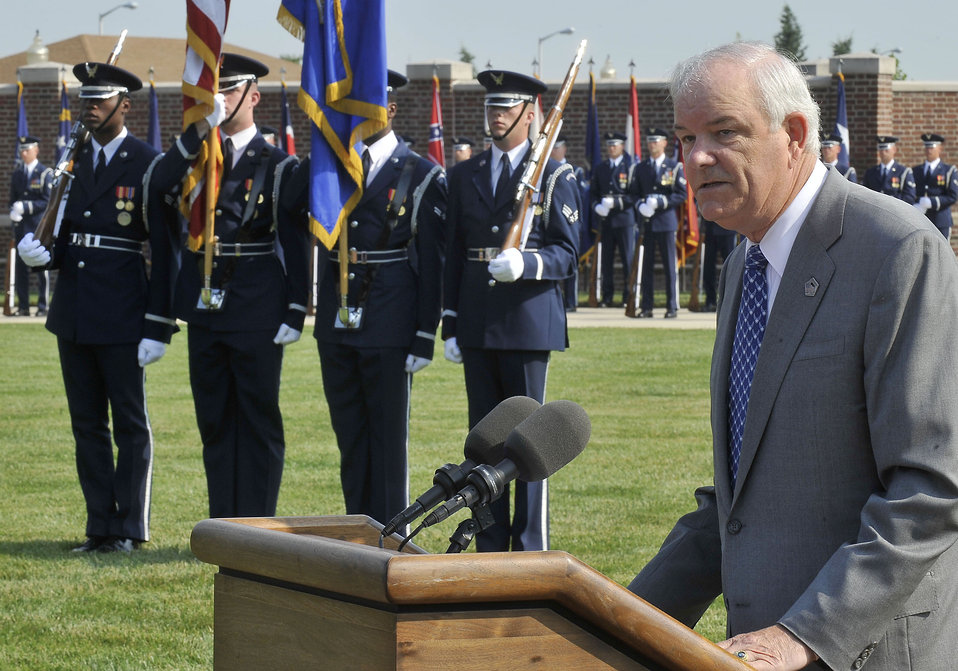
CSAF Retirement Ceremony

Michael Wynne, the former Secretary of the Air Force, honors Gen. T. Michael Moseley during the latter's retirement ceremony on Bolling Air Force Base, D.C., July 11. General Moseley is the 18th chief of staff.